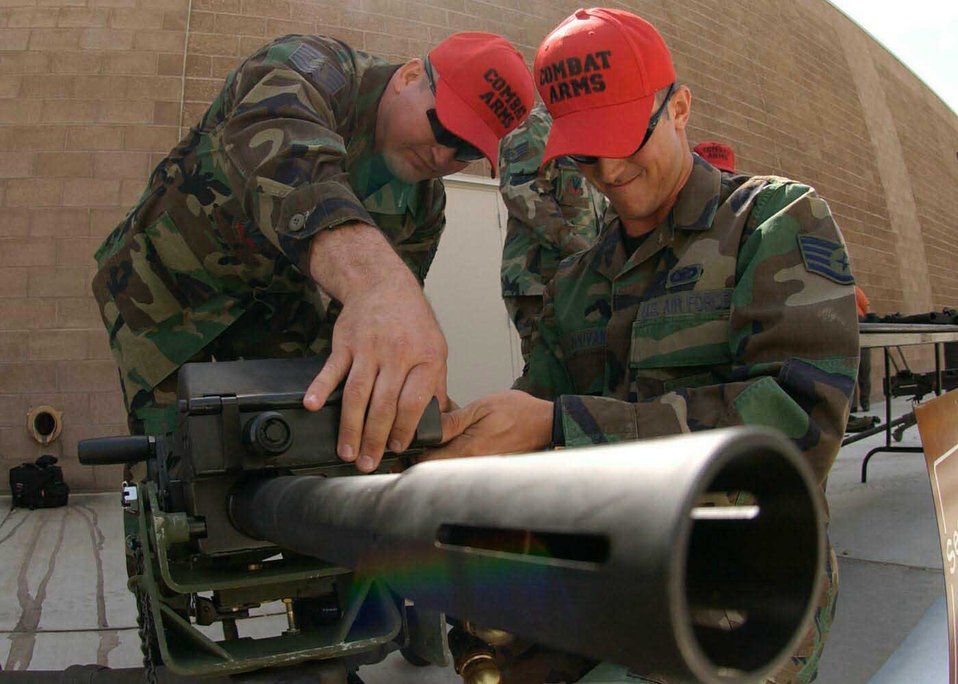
Police week showcase

DAVIS-MONTHAN AIR FORCE BASE, Ariz. -- Tech. Sgt. Jose Silva (left) and Staff Sgt. Justin Youvan load dummy rounds into an MK-19 automatic grenade launcher here May 17 during National Police Week. The Airmen are combat arms instructors with to the 355th Security Forces Squadron.